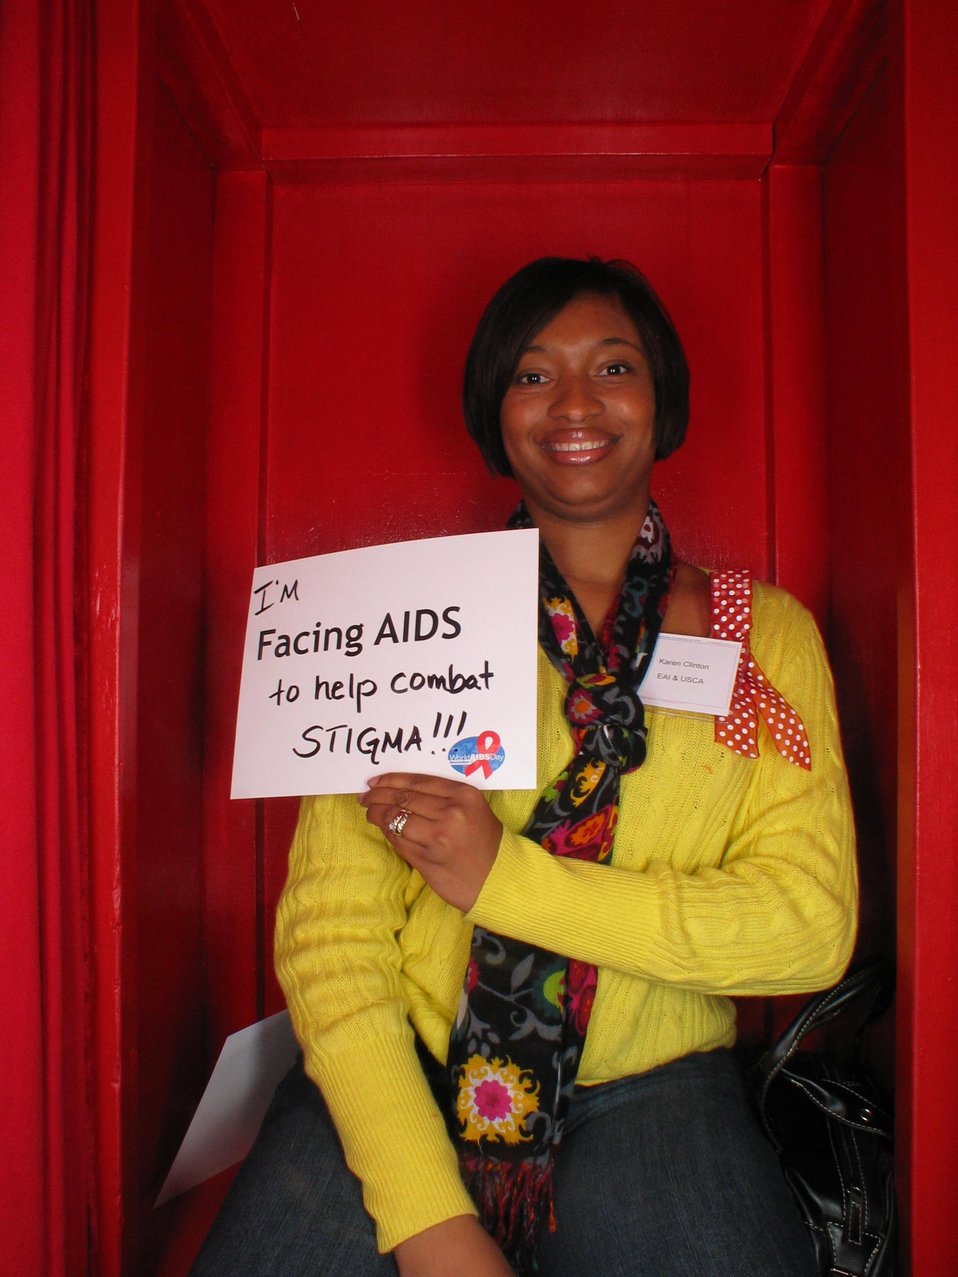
I'm Facing AIDS to help combat stigma!!!